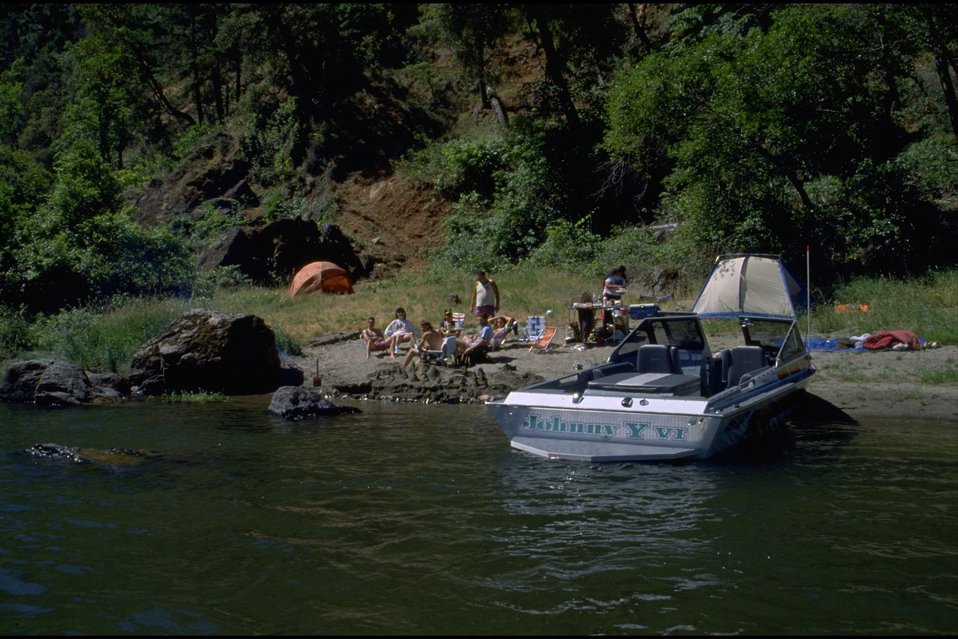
Rogue River - Hellgate Recreation Area. Camp (river left) just above Dunn Rapid.